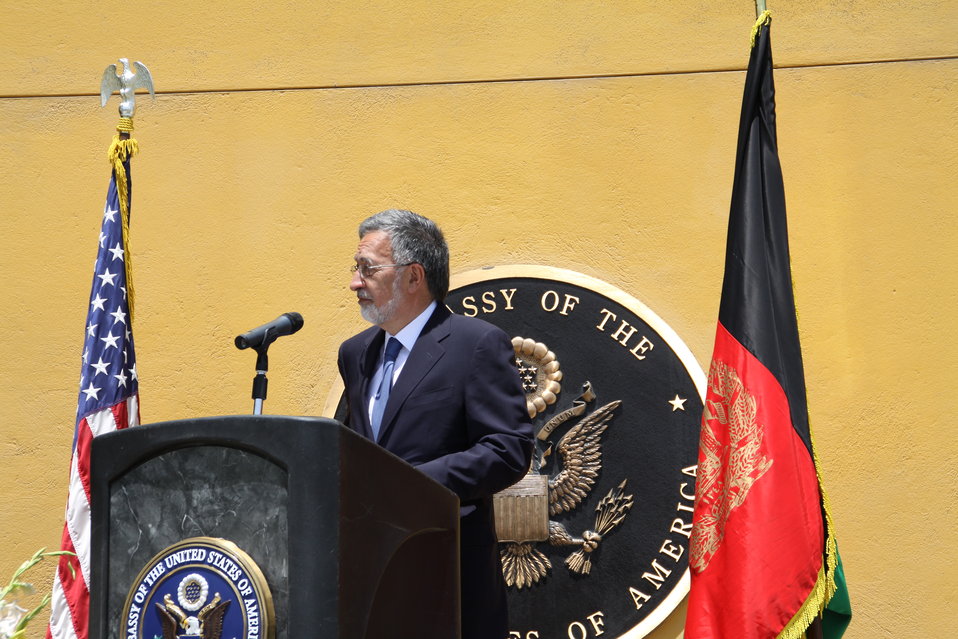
Kabul Official July 4th Celebration